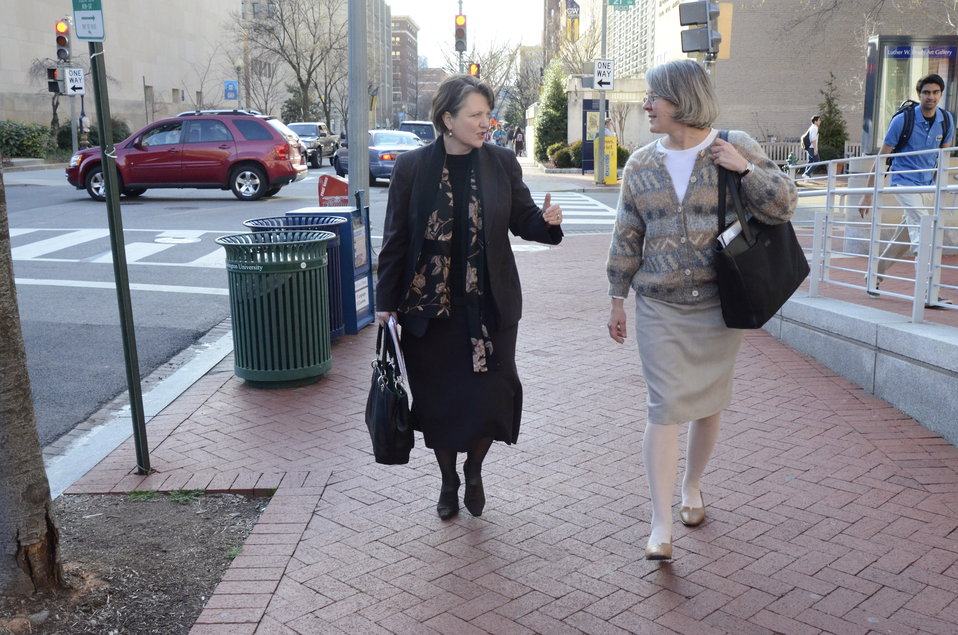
Agriculture Deputy Secretary Dr. Kathleen Merrigan (left) talks to Margaret Krome as they walk on the George Washington Campus to participate in the 'Shaping the Farm Bill for a Sustainable Future.' Forum at The Trachtenberg School of Public Policy and Public Administration, George Washington University in Washington, D.C., on Thursday, March 1, 2012.